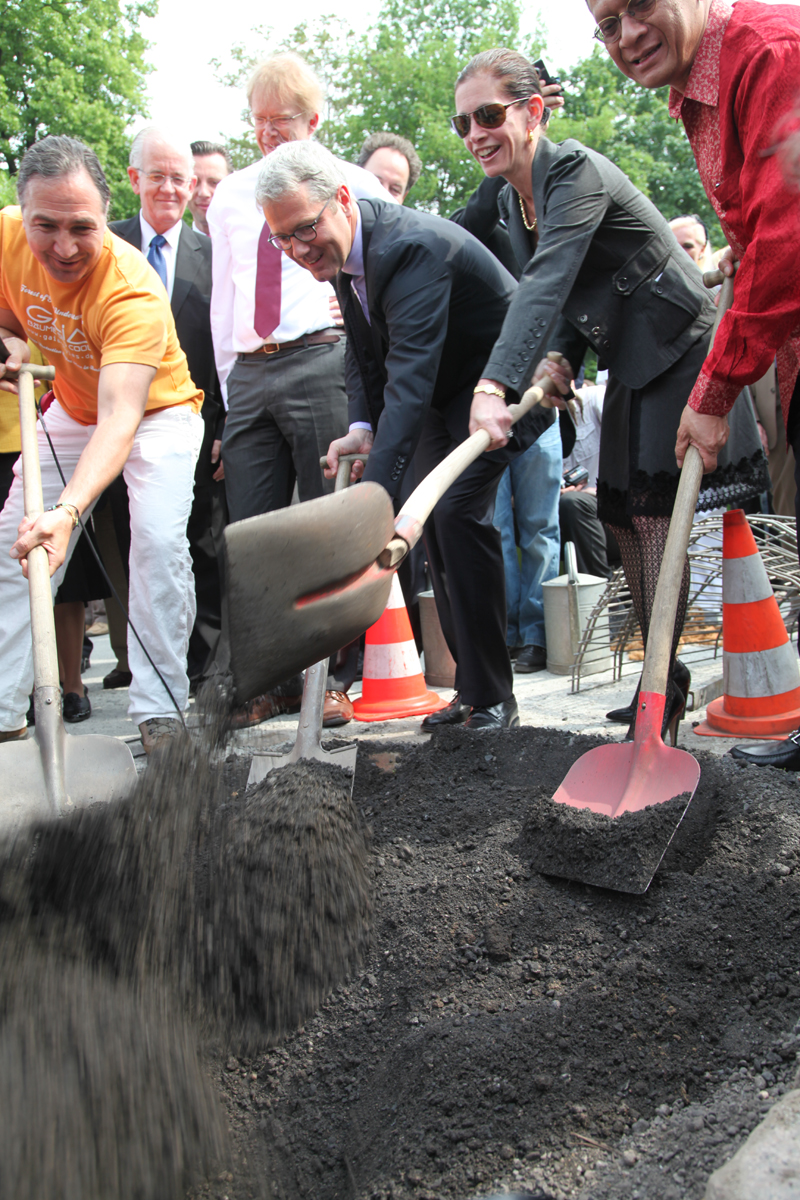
The Community Participate in 'Forest of Global Understanding'

Together with the Minister for the Environment Norbert Röttgen, ambassadors, politicians, students and representatives of the press and the industry, Tammy Murphy participates in an event called “Forest of Global Understanding', organized by GAIA, in Berlin, Germany, on May 12, 2011.